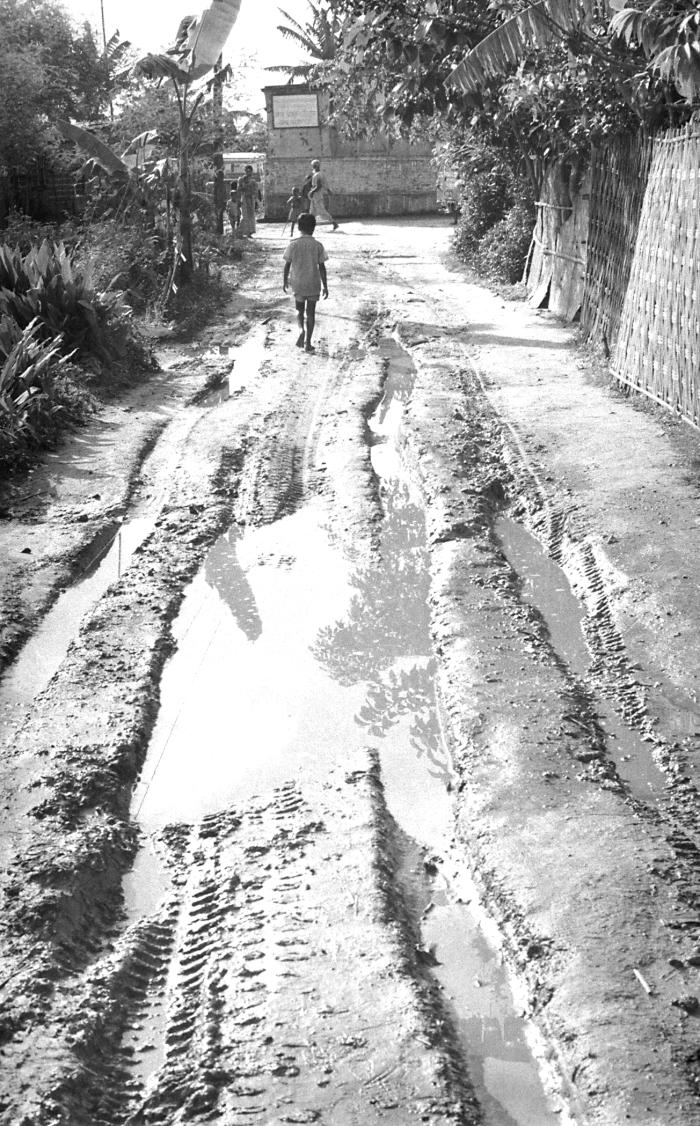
This image depicted a muddy road in a typical Bangladesh town, which was traversed by numerous tire tracks, including those from the smallpox eradication team Jeep. This photograph provided by Dr. Stan Foster, and captured by Pierre Claquin, M.D., B.A.C., who at the time was a member of the World Health Organization's Smallpox Eradication Program. It was part of a series photographed by former E.I.S. officer, Stanley O. Foster M.D., M.P.H., and was one of a series entitled 'The Story of One Smallpox Jeep', which depicted the travails faced by the jeep, and its occupants of public health practitioners, as they road through the Bangladesh countryside in an attempt to eradicate smallpox from the country.